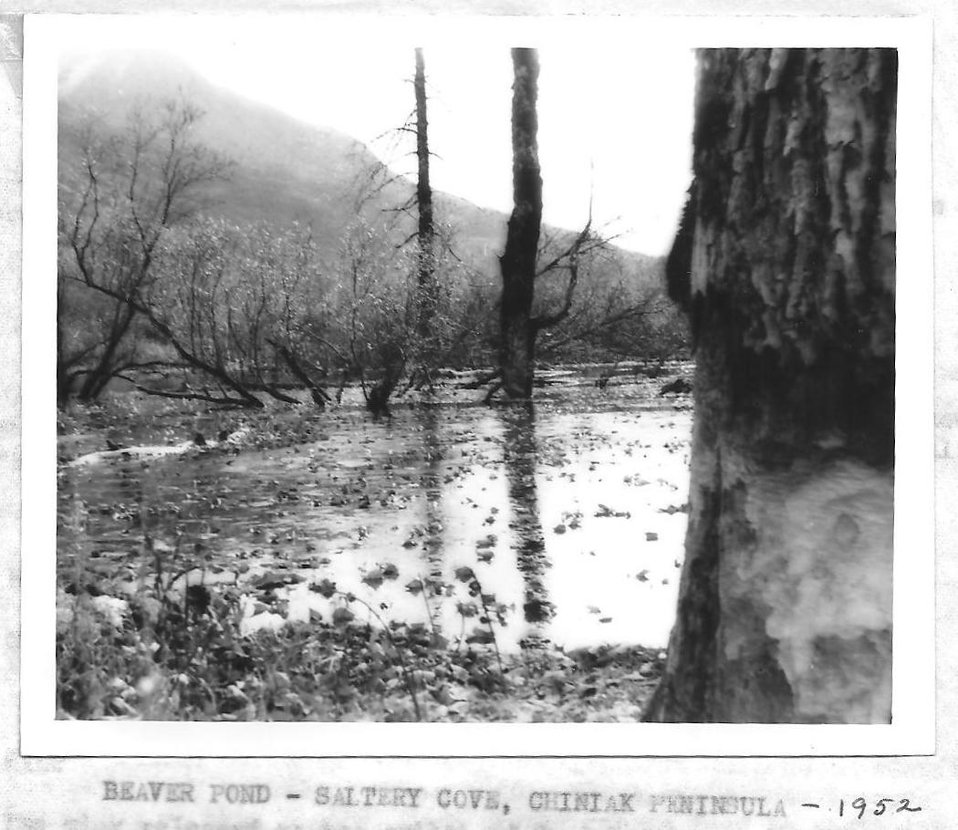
(1953) Beaver Pond

Credit: USFWS

Source and Contact: Kodiak National Wildlife Refuge